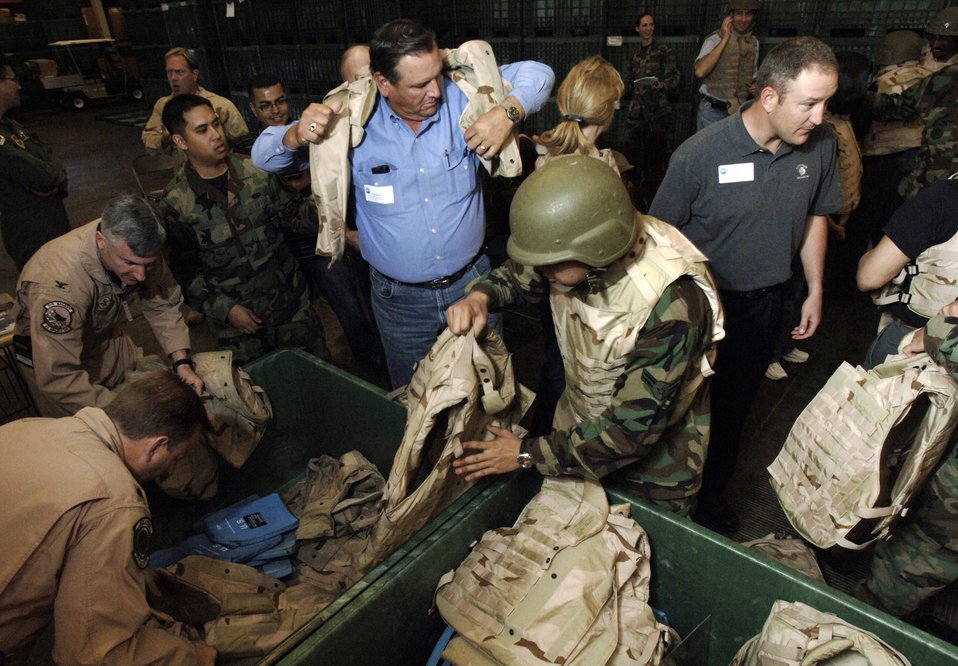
Civic leaders tour Travis during Air Force Week

Dan Borges tries on a flak jacket during an honorary commanders' tour June 7 as part of Air Force Week at Travis Air Force Base, Calif. The purpose of Air Force Week is to inform and educate the American public about the importance and roles of the Air Force in America's national defense.